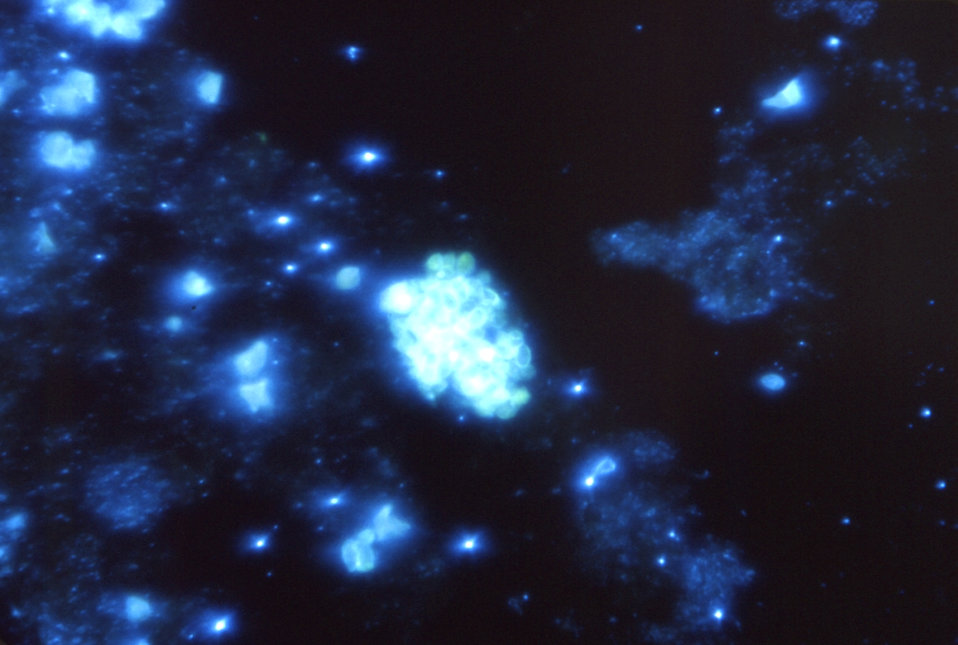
Magnified 625X, "digested", then stained using a fluorescent antibody-staining technique, this photomicrograph reveals the presence of Histoplasma capsulatum antigens in this human lung tissue specimen.